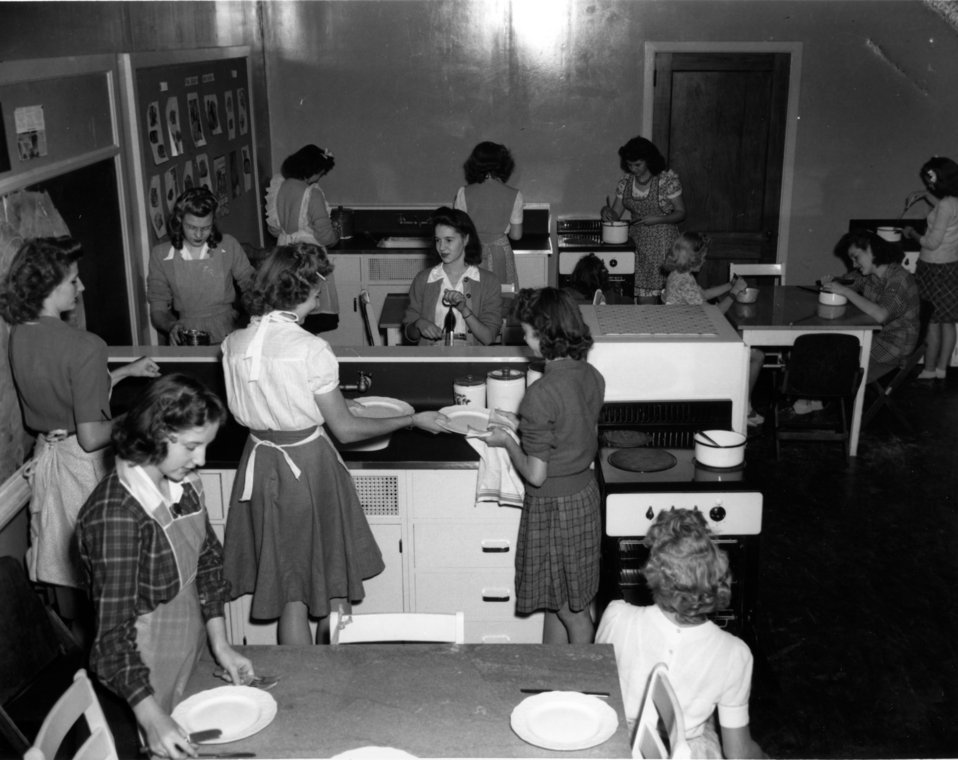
Schools at Oak Ridge